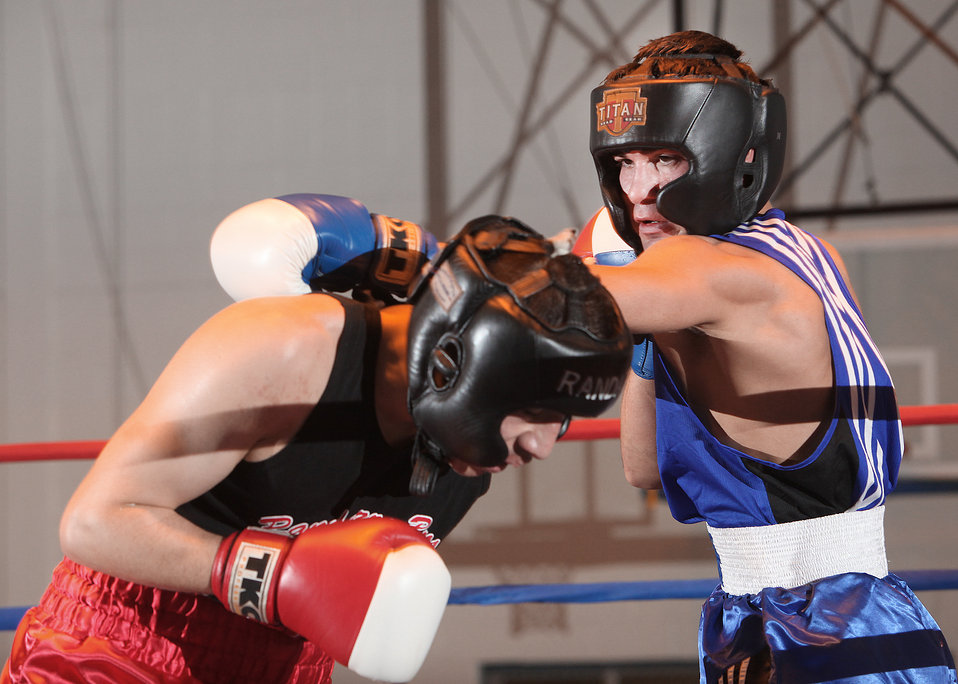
Air Force Box-offs

Lightweights James Barber (right) and Saul Montes compete during the Air Force Box-off tournament Jan. 22, 2011, at Lackland Air Force Base, Texas. Barber lost the decision. Barber is assigned to Tinker Air Force Base, Okla., and Montes is a civilian with the Randazzo Brothers Boxing Club in San Antonio.